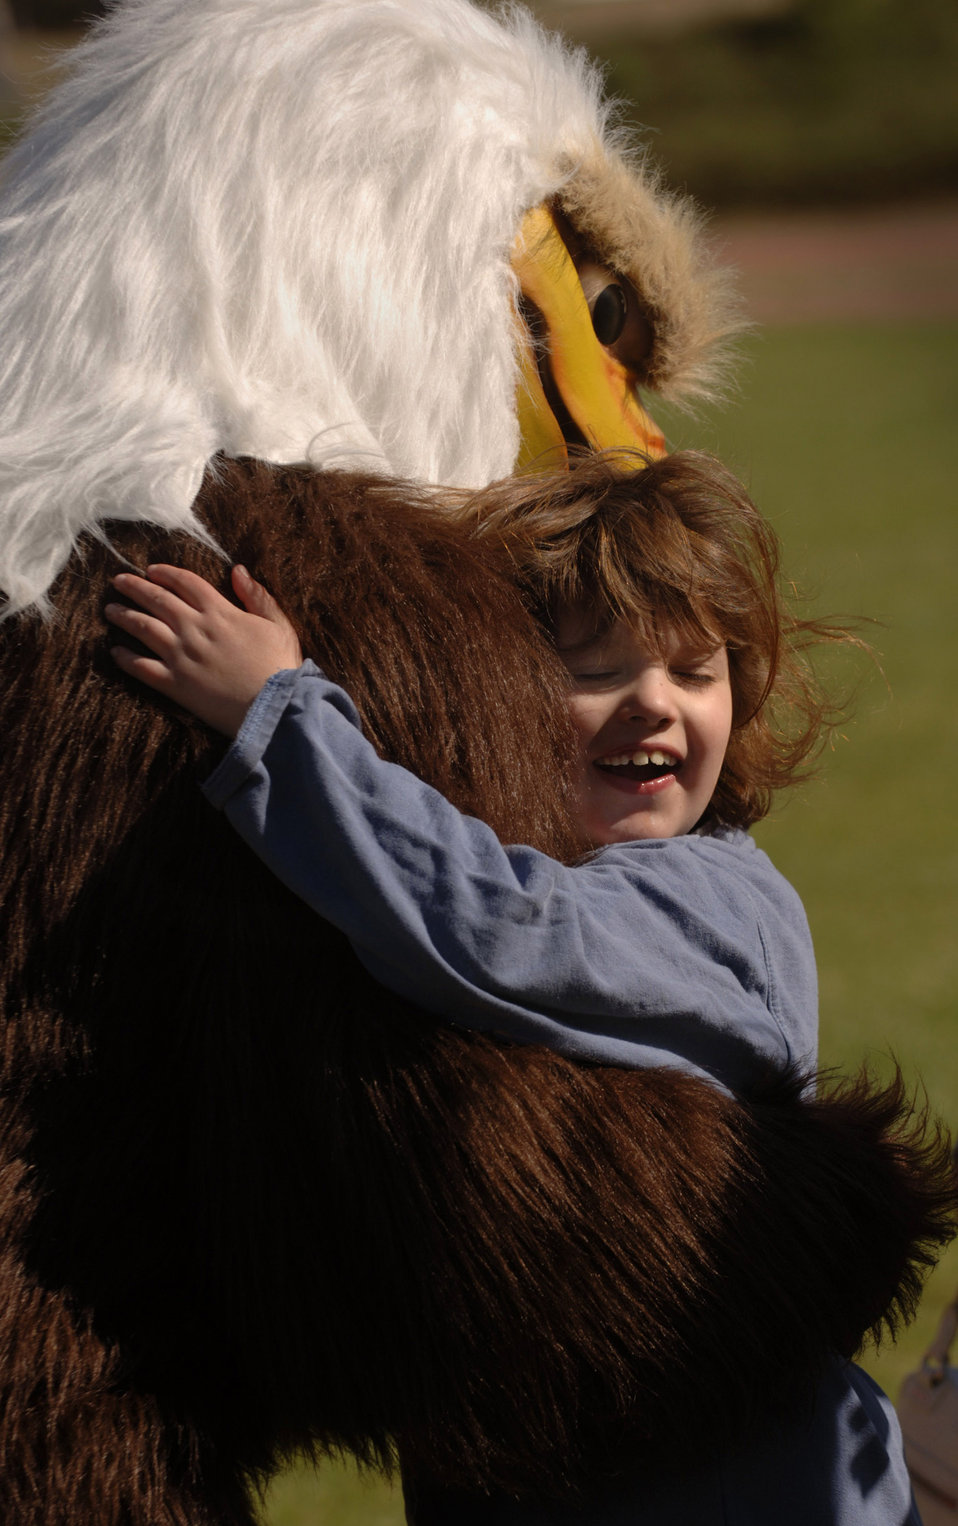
Airmen make olympics special

Natalie Muller of Wiesbaden gets a hug from the Armed Forces Network Eagle mascot during the 2007 Special Olympic Games May 2 in Enkenbach-Alsenborn, Germany. Numerous German and American volunteers from the Kaiserslautern military community assisted more than 750 Special Olympians who competed in the 24th annual games here.